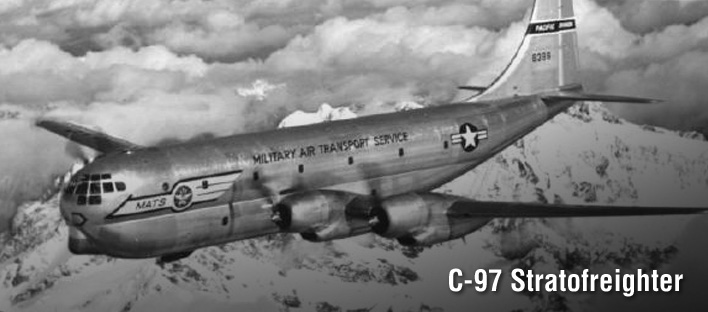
C-97 Stratofreighter, history spotlight graphic, U.S.